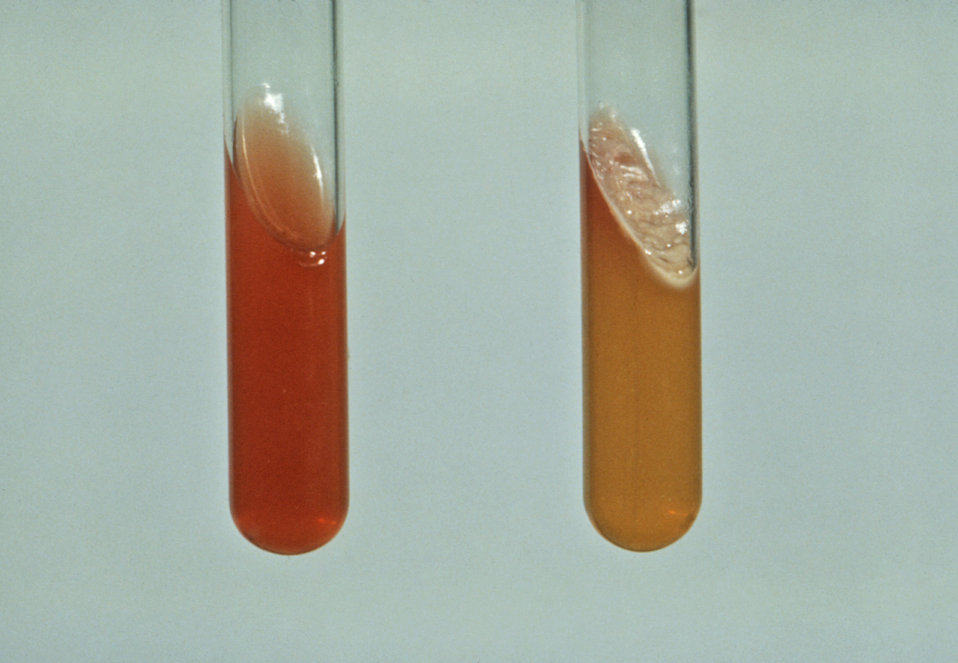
This photograph depicts the colonial growth pattern displayed by the Gram-negative enteric bacterium Yersinia enterocolitica cultivated on this triple sugar iron agar (TSI) medium.